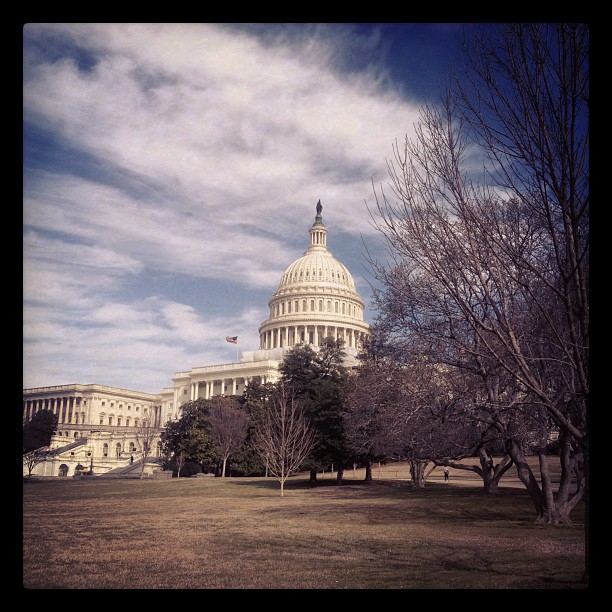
Nice February day at Capitol.